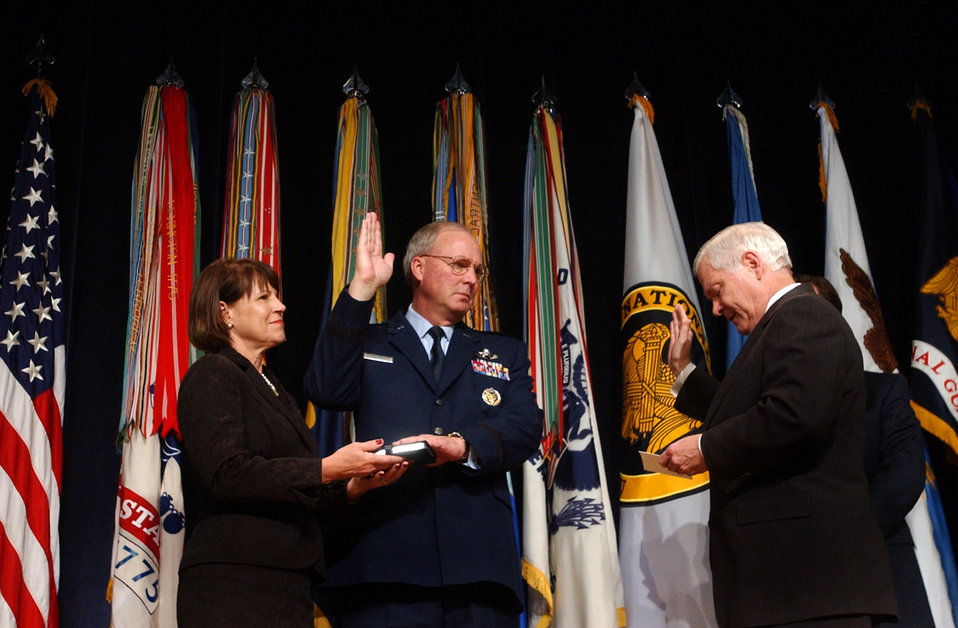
Guard's first 4-star general ready to take Minutemen forward

Gen. Craig R. McKinley is sworn in by Secretary of Defense Robert M. Gates as the 26th chief of the National Guard Bureau as his wife, Cheryl McKinley, holds a bible during a Nov. 17 ceremony at the Pentagon. General McKinley was also promoted to his current rank and is the first Guard officer to be promoted to the four-star rank.